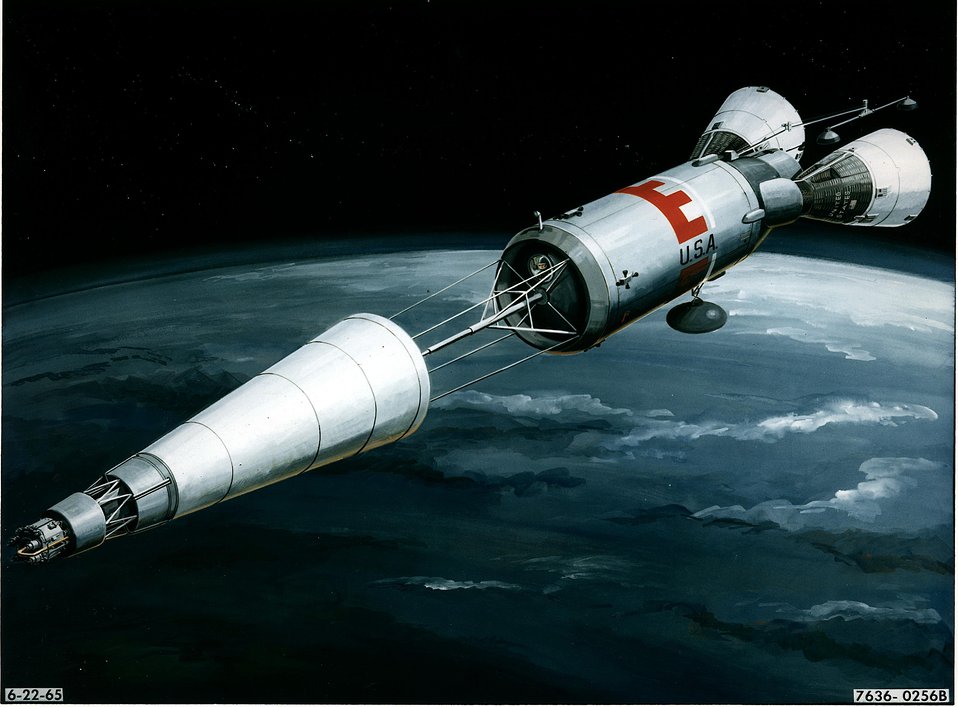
SNAP reactor/ short lived manned station